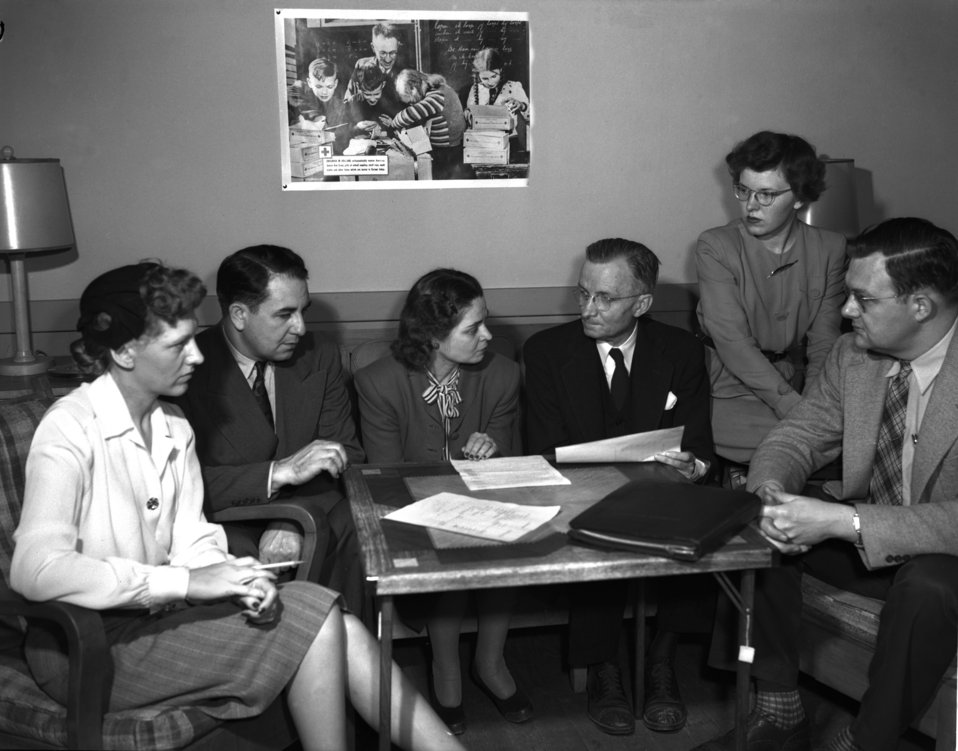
American Red Cross Committee Oak Ridge

3255-2 DOE photo Ed Westcott 1-16-1947 Oak Ridge Tennessee